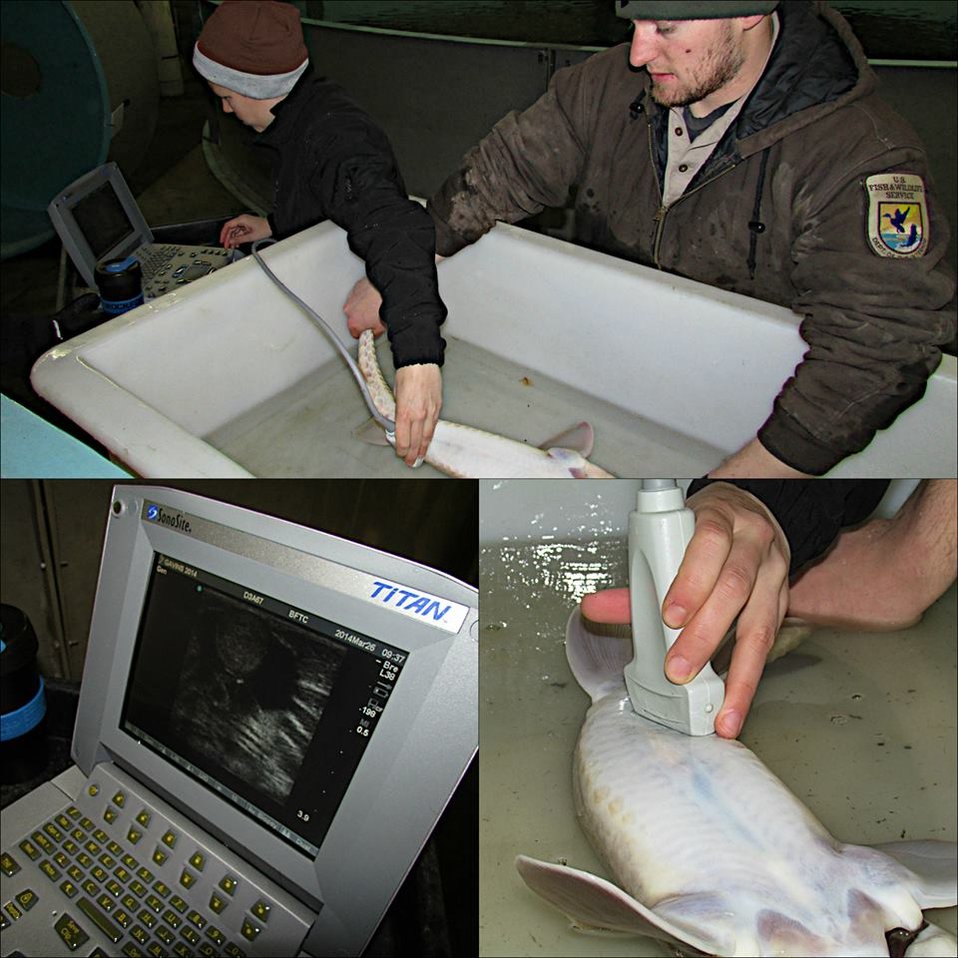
Ultrasound

Today we gave ultrasounds to our pallid sturgeon. This helps us determine which fish to use for spawning, since most females only produce eggs every three years.